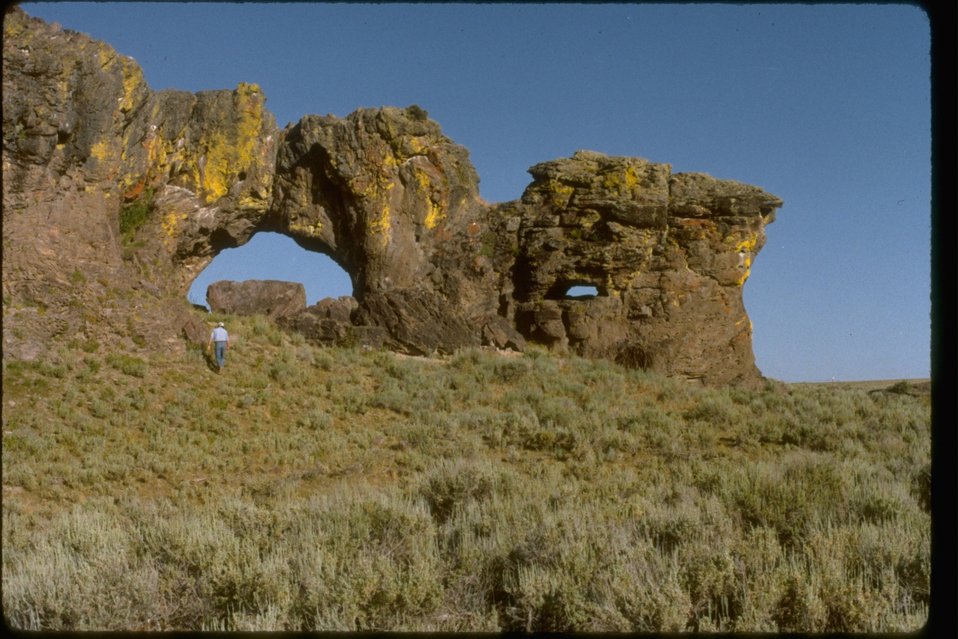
Rock formation with sagebrush in foreground in the Upper West Little Owyhee Wilderness Study Area. OR 3-173.